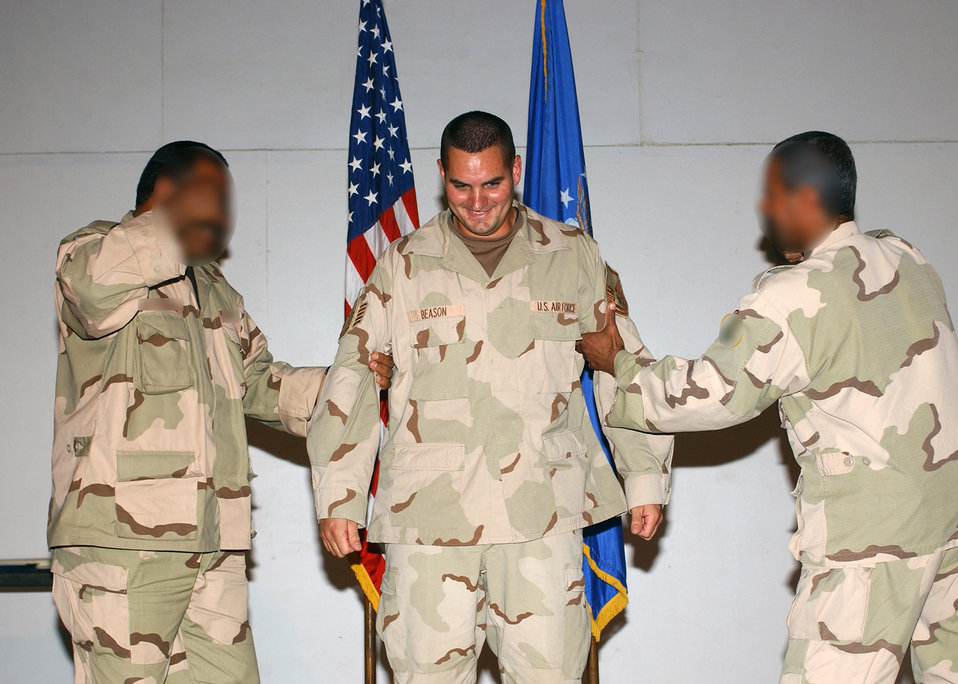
Iraqi airmen tack on master sergeant's stripes

TALLIL AIR BASE, Iraq -- Two Iraqi airmen tack new stripes on Master Sgt. Bubba Beason during his promotion ceremony here. Sergeant Beason is the airmen's hydraulics instructor. He said he wanted the students to tack on his stripes because they and the rest of their countrymen are part of the reason he got promoted in the first place. Sergeant Beason is assigned to the 777th Expeditionary Aircraft Maintenance Squadron. The students' faces are blurred for their protection.